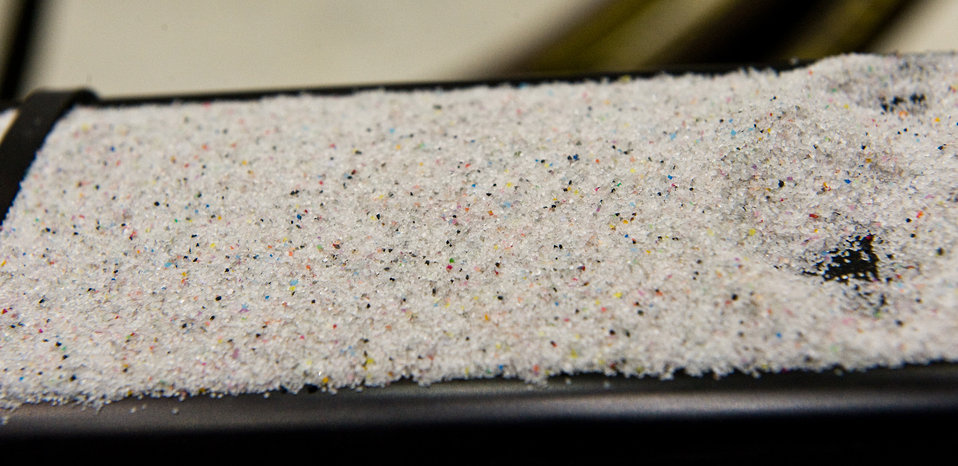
Depaint the big easy way

What appears to be sand are plastic beads that are shot through four air hoses controlled by the Area Multi-axis Platforms, or AMP, to depaint aircraft at the 402nd Maintenance Support Squadron at Robins Air Force Base, Ga. A foreman operates the AMP from inside a cab that has fresh pumped in for the operator to breathe and to push plastic beads and paint particles out of cab openings. This environmentally friendly system presents a low hazard to the operators and the environment, while making the depaint process faster. Each AMP does the work of 10 people (four two-person teams with one nozzle to a team, plus additional safety/support personnel).